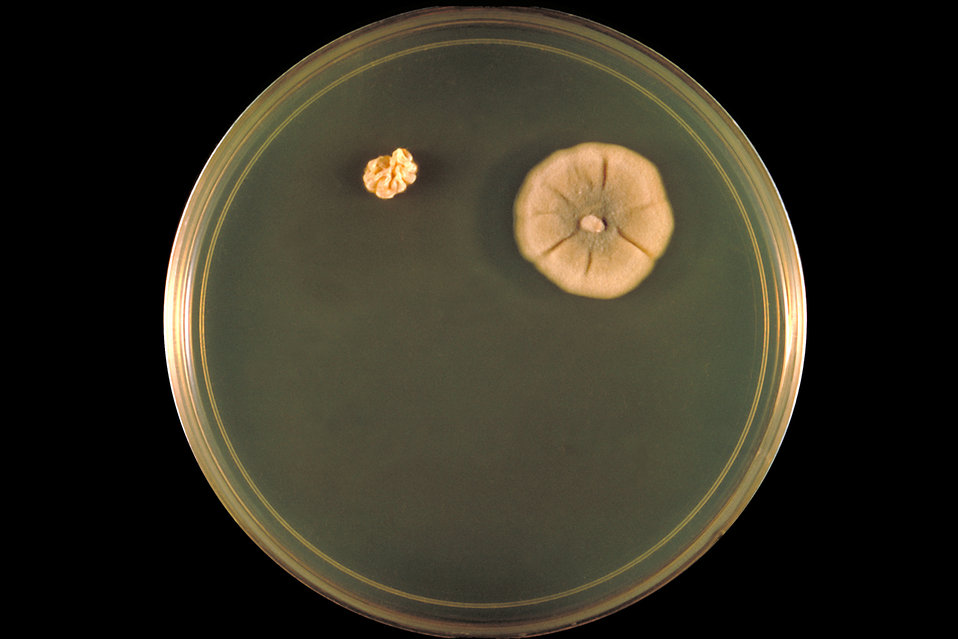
This image shows a C&C agar plate culture with colonies of the fungusTrichophyton concentricum.